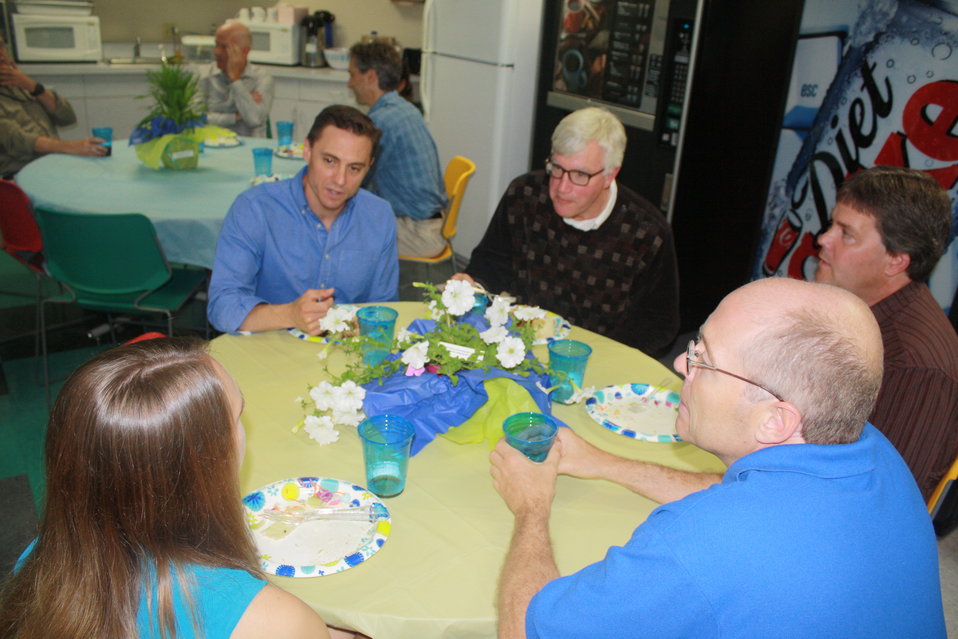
R5 Awards Ceremony